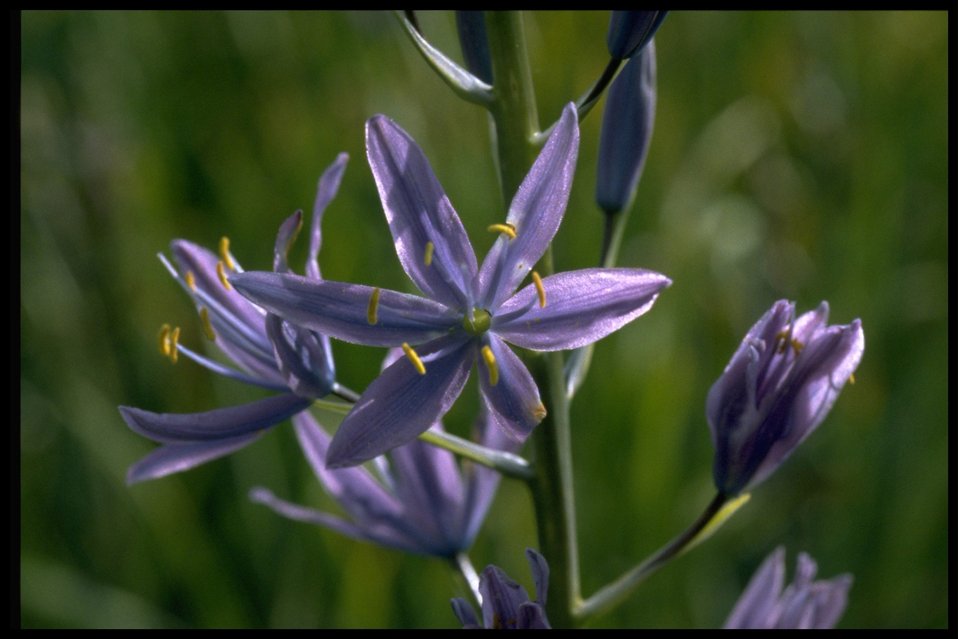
Closeup shot of Camassia quamash.